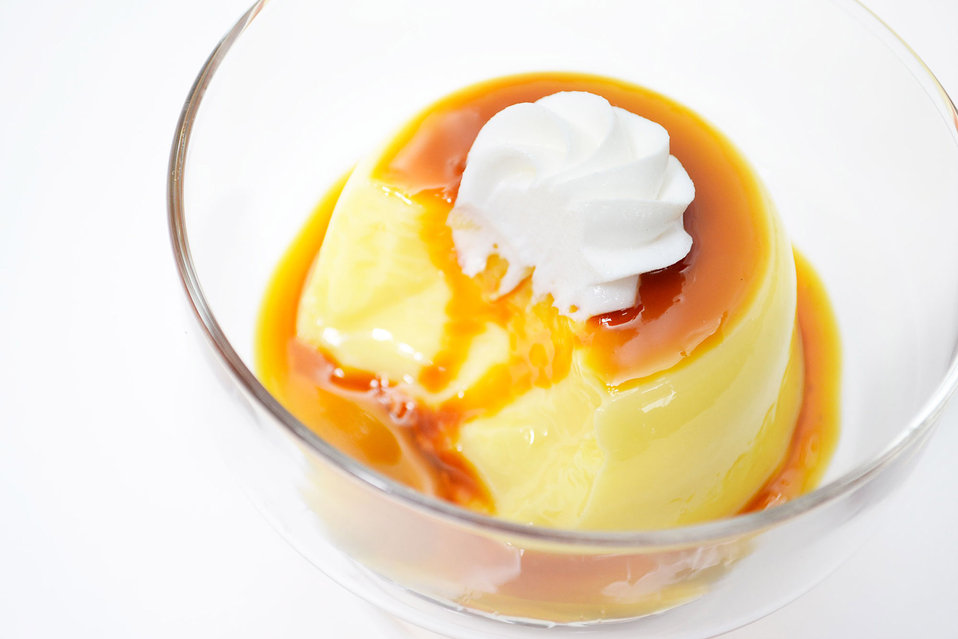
Caramel custard pudding.